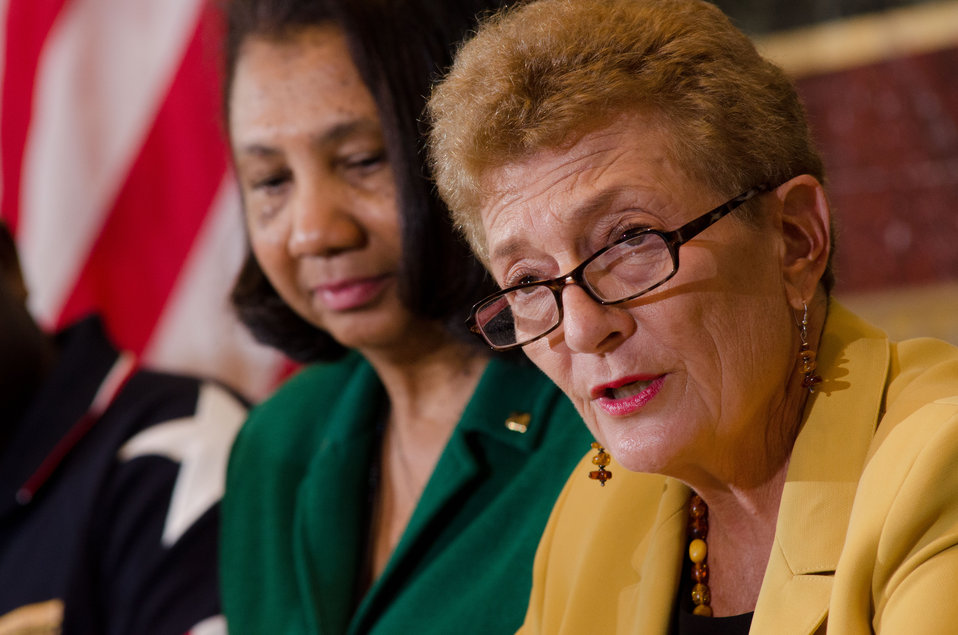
Education Assistant Secretary for Vocational and Adult Education Brenda Dann-Messier, co-moderates the Educators/Mentors Champions of Change Panel at the Champions of Change Recognition event in the Indian Treaty Room of the Executive Office Building in Washington, D.C. on Tuesday, Oct. 9, 2012. The Champions of Change program was created to honor ordinary Americans doing great work in their communities. Each week, a different sector is highlighted and groups of Champions, ranging from educators, entrepreneurs and community leaders, are recognized for the work they are doing to serve and strengthen their communities.